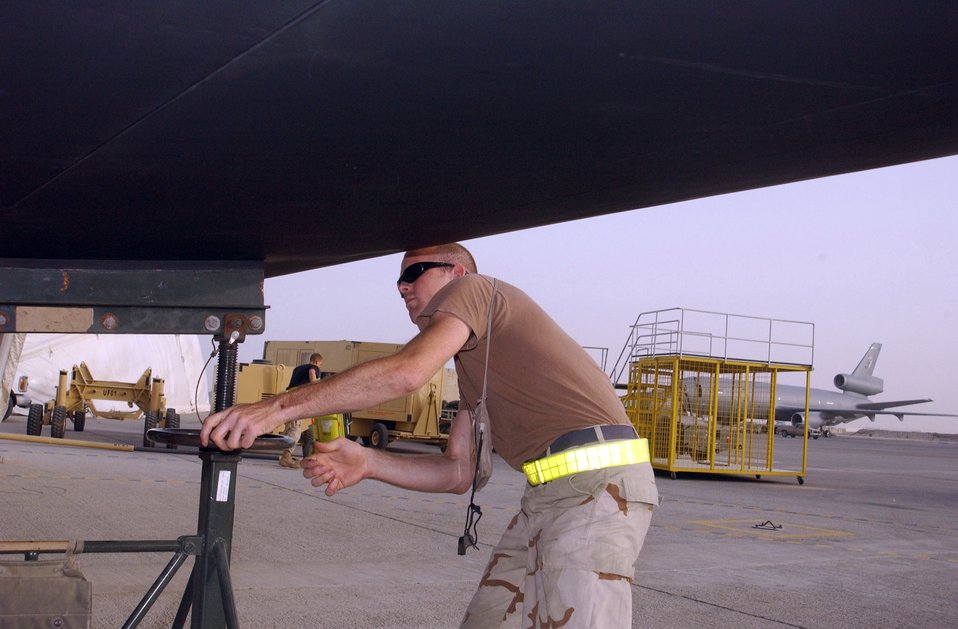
U-2 maintainers boast streaking hot record

Airman 1st Class Jeffrey Huot adjusts the height of a jack under the wing of a parked U-2